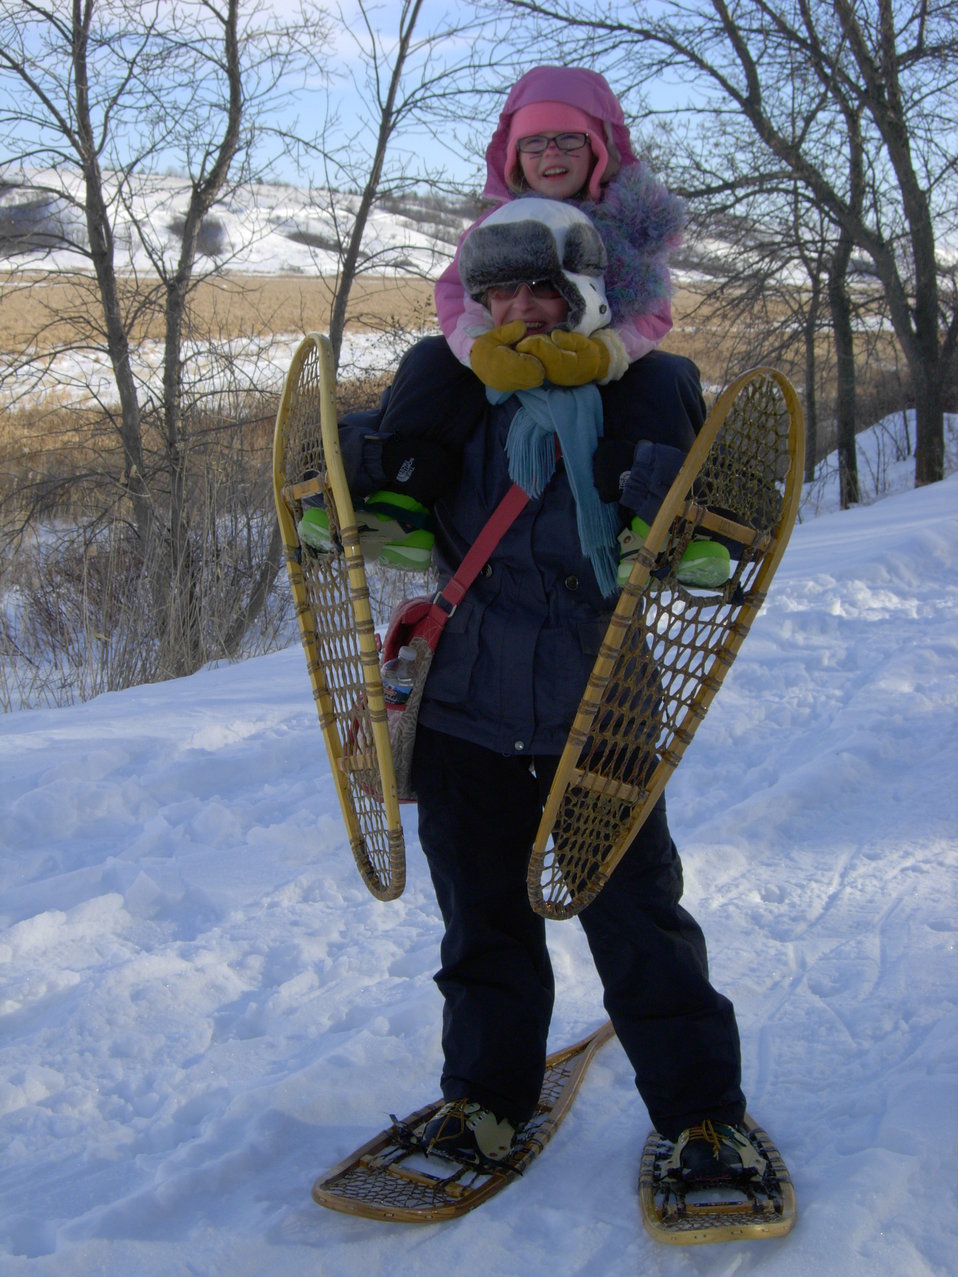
Let's Go Snowshoeing! Jan 29, 2011

Catching a ride with mom!